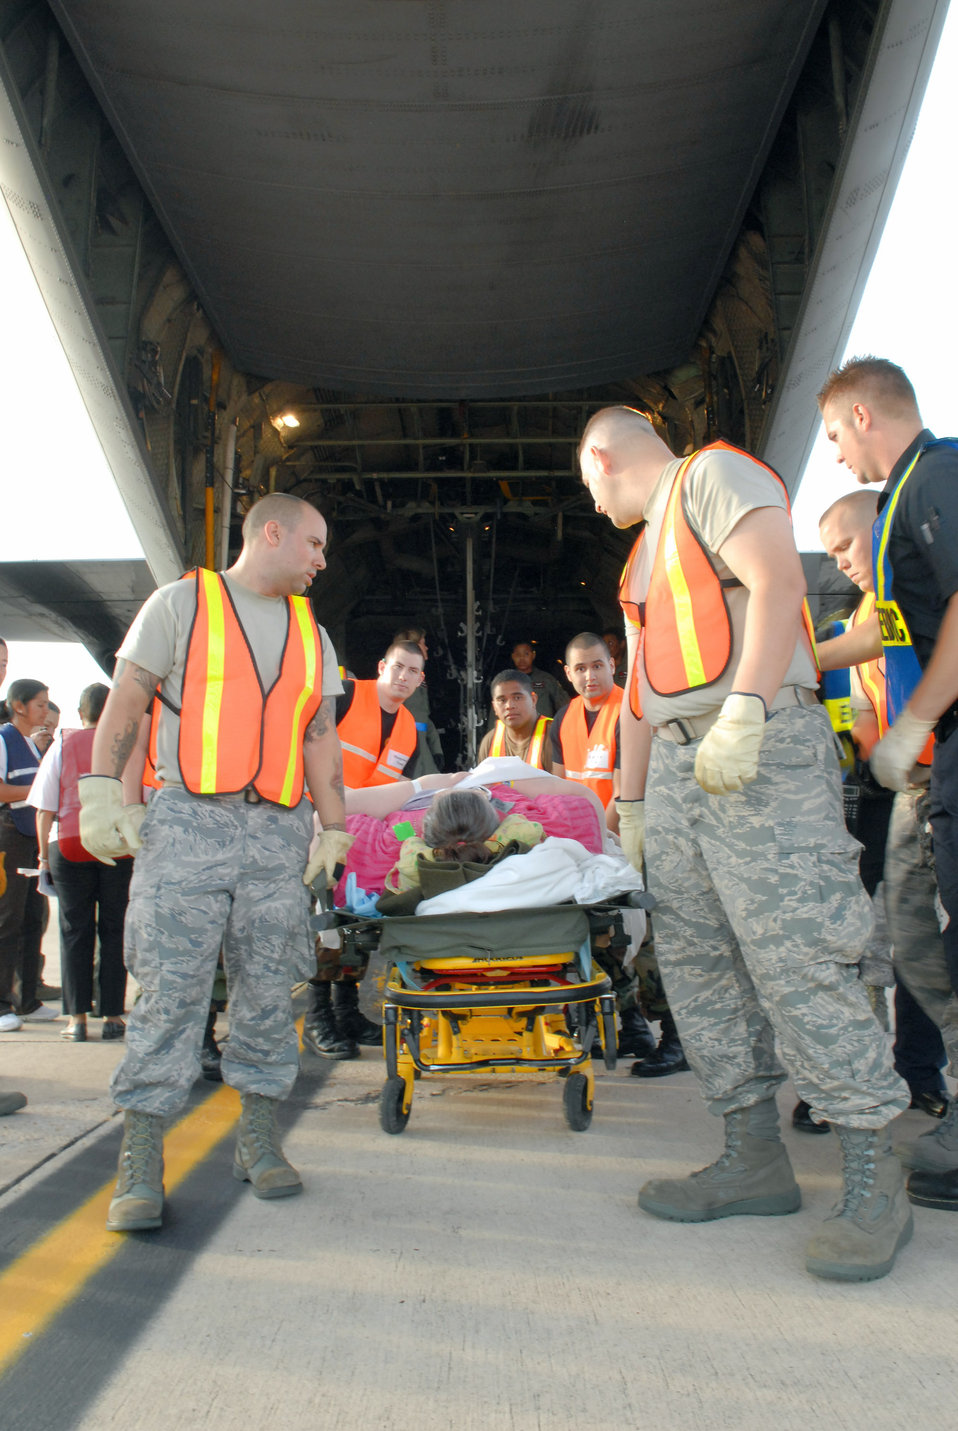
Airman evacuate patients from Beaumont

Airmen from the 37th Training Wing and 59th Medical Wing at Lackland Air Force Base in San Antonio unload hospital patients Sept. 12 evacuated from Beaumont, Texas. The patients were transported in C-130 Hercules aircraft by aircrews from Little Rock AFB and medical Airmen from the 908th Aeromedical Evacuation Squadron at Scott AFB, Ill., in preparation for Hurricane Ike's landfall in southern Texas.